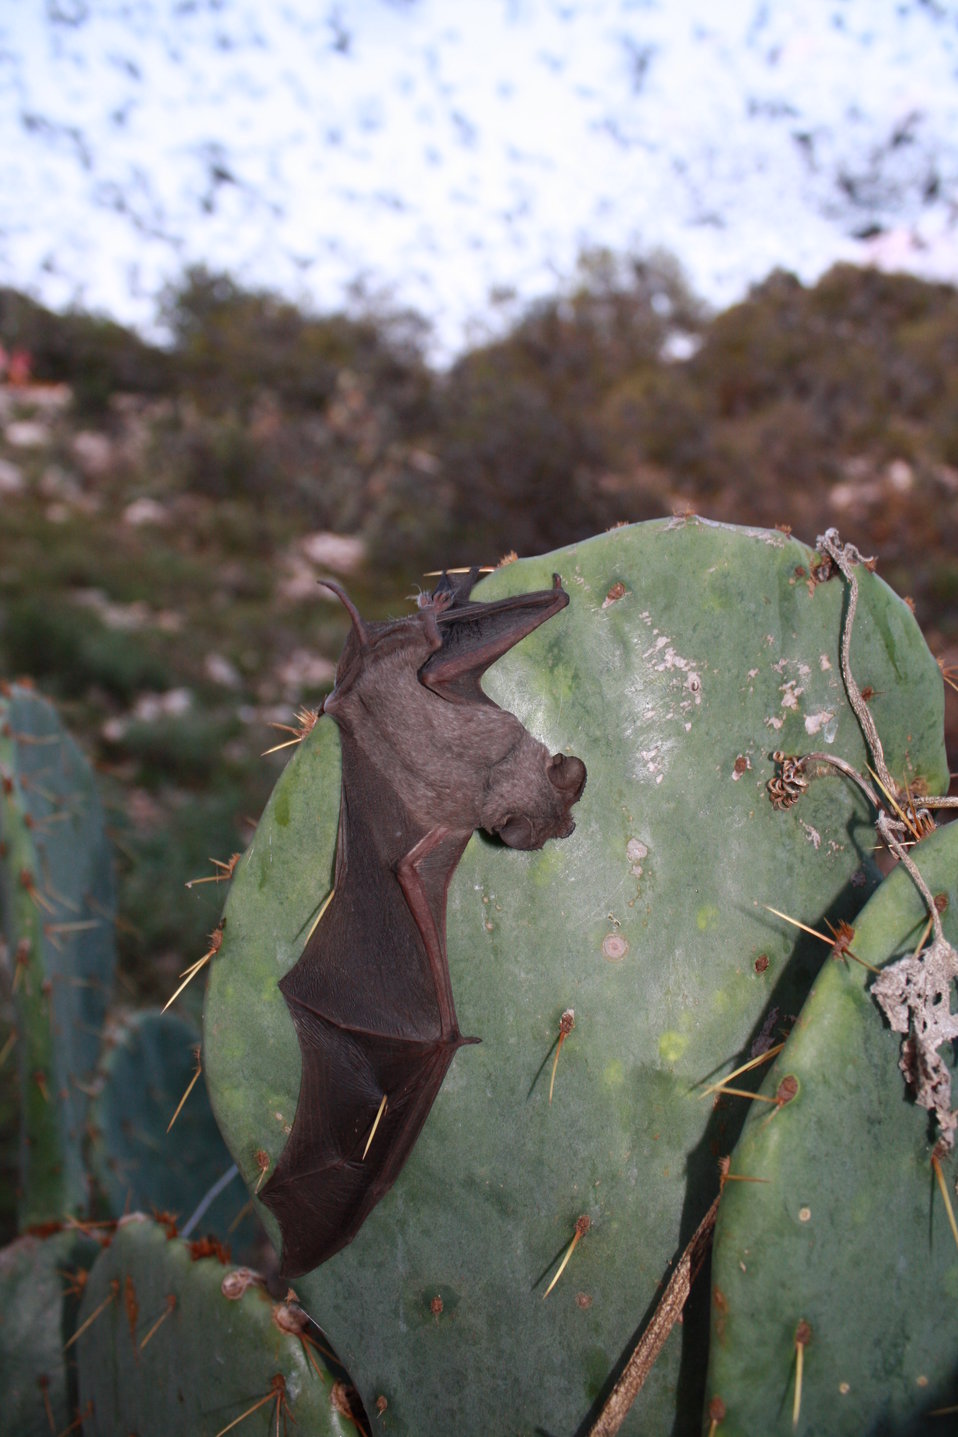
Mexican free-tailed bat on cactus

There are so many bats leaving the cave, some are blown into dearby vegetation. This bat was stuck on a cactus, but later freed itself. Bat wing tissue heals quickly if damage is not too severe.